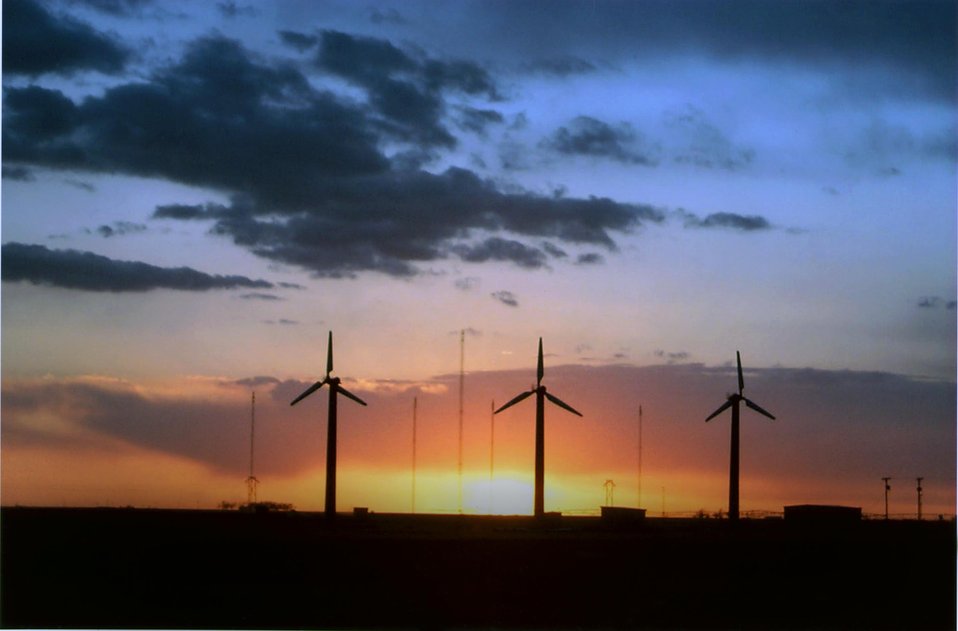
ELECTRICITY GENERATING TURBINES BEING TESTED BY SNL IN BUSHLAND, TEXAS.

THE TURBINES ARE PART OF LONG-TERM EXPERIMENTS BY SNL'S WIND ENERGY TECHNOLOGY DEPARTMENT. SANDIA INSTALLED THE TURBINES, EACH 16 METERS IN DIAMETER ON 22 METER TALL TOWERS AT THE DEPARTMENT OF ARGICULTURE'S RESEARCH STATION IN BUSHLAND, TEXAS. THE TURBINES WILL BE USED TO MEASURE LOAD CAUSED BY UNUSUAL EVENTS IN THE INFLOW (TURBULENCE) AND TO STUDY WAYS OF BUILDING BETTER BLADES.